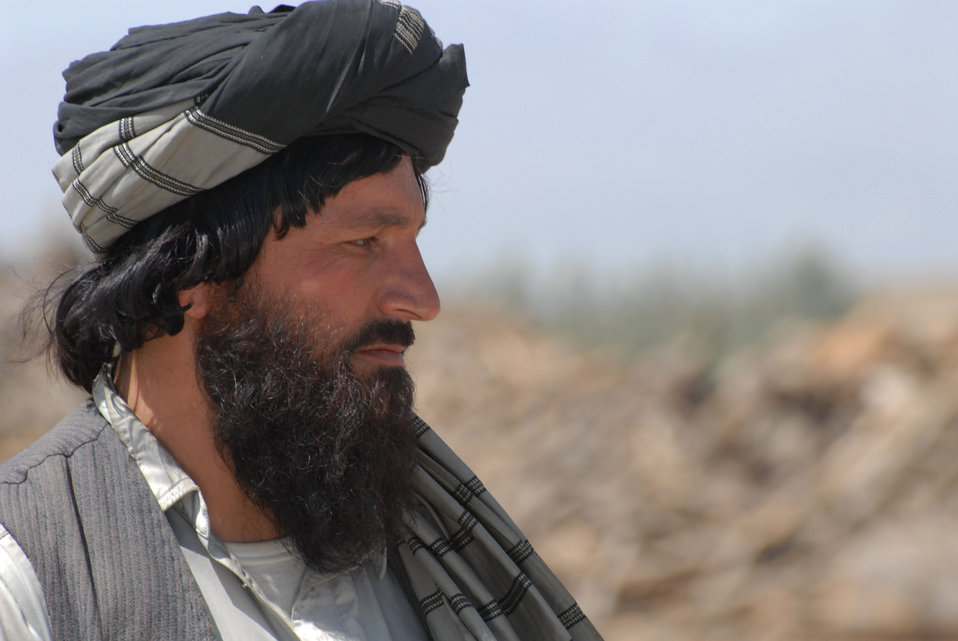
'On the Road' in Paktya Province